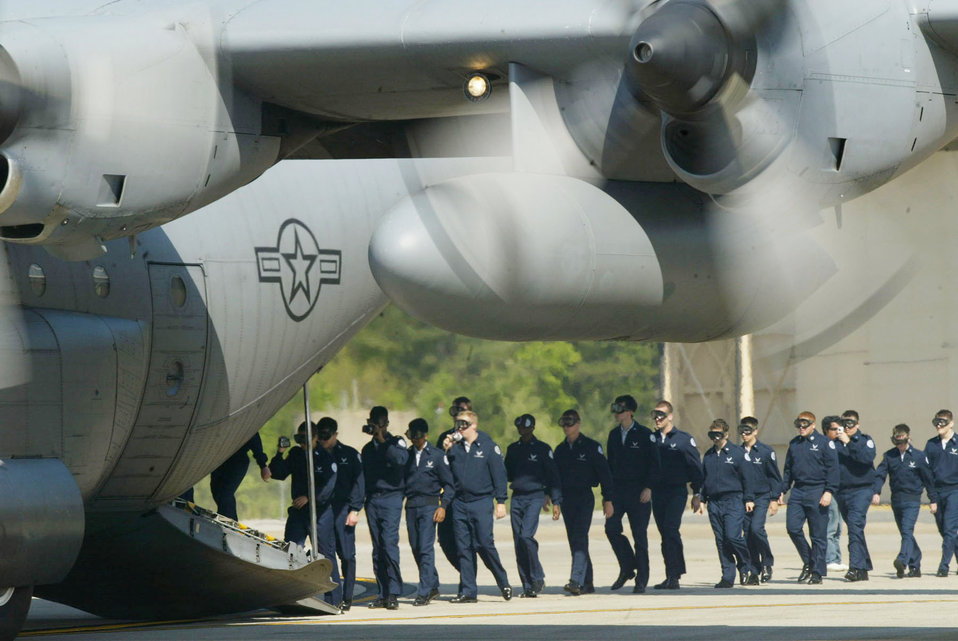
Follow the leader

Air Force JROTC cadets board a C-130 Hercules transport for their orientation flight during the 2010 JROTC visit held April 14, 2010, at Dobbins Air Reserve Base, Ga. Orientation flights introduce young cadets to general aviation and military service through interaction with the Air Force's aircraft, equipment and people.